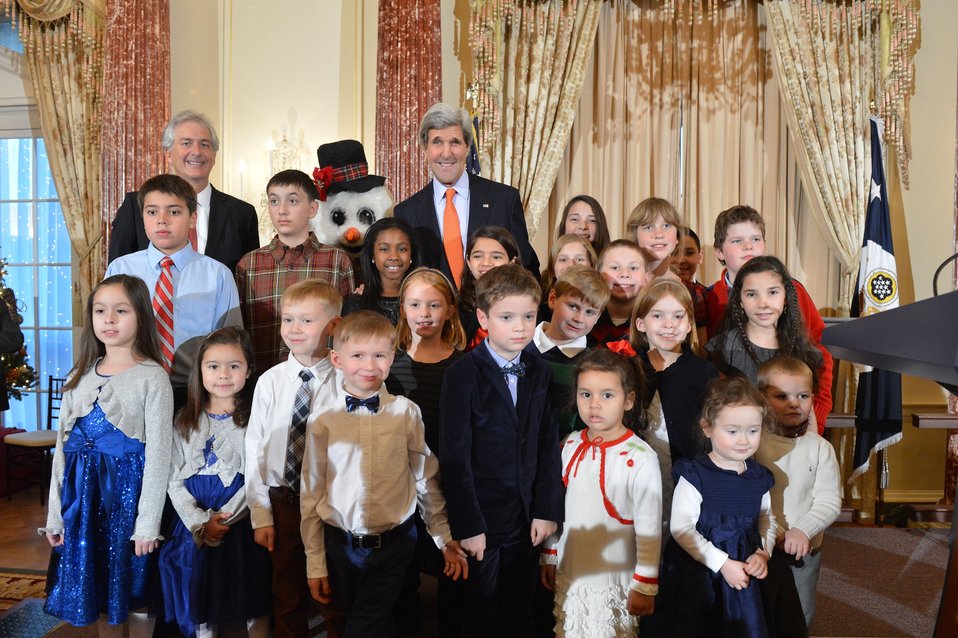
Secretary Kerry Hosts the Unaccompanied Tour Families Holiday Reception

U.S. Secretary of State John Kerry hosts the Unaccompanied Tour Families Holiday Reception at the U.S. Department of State in Washington, D.C., on January 7, 2013.